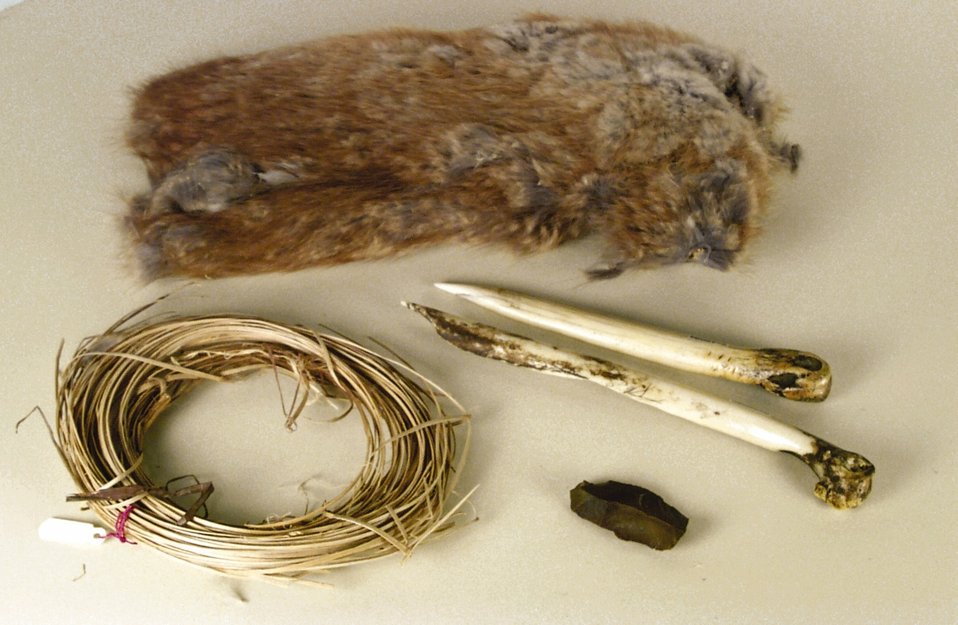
Basket makers kit, the longest of two bone awls is 160mm